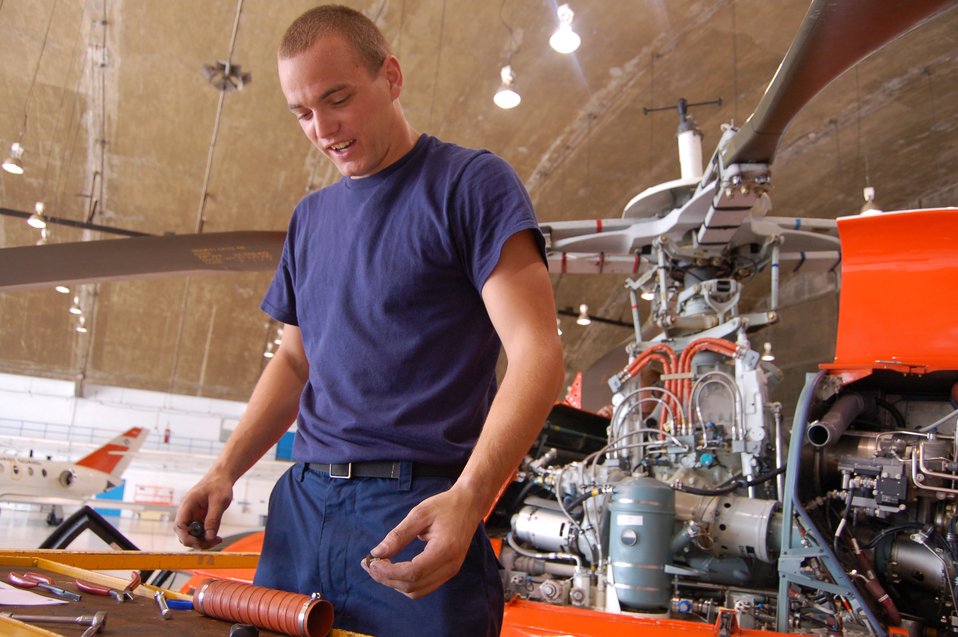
Blue uniforms continue command over Puerto Rico sky

Coast Guard Petty Officer 3rd Class Ryan Harper prepares to replace oil cooler brackets on an HH-65C Dolphin helicopter March 20 at Coast Guard Air Station Borinquen, Puerto Rico. Petty Officer Harper is an aircraft maintenance technician. The Coast Guard air station has four HH-65Cs and 100 Coast Guardsmen.